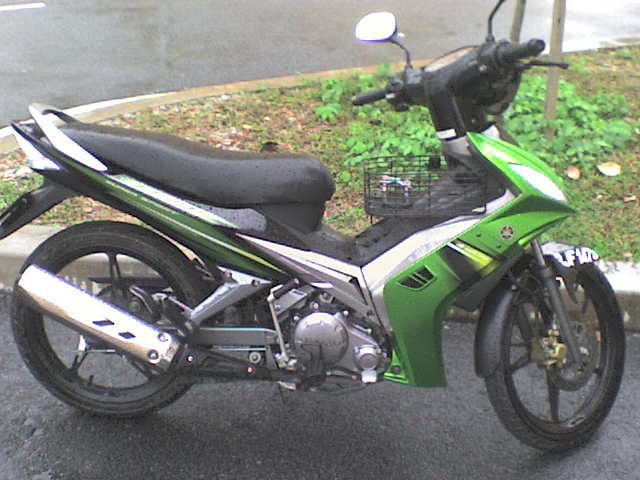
Yamaha Y135LC at a parking lot